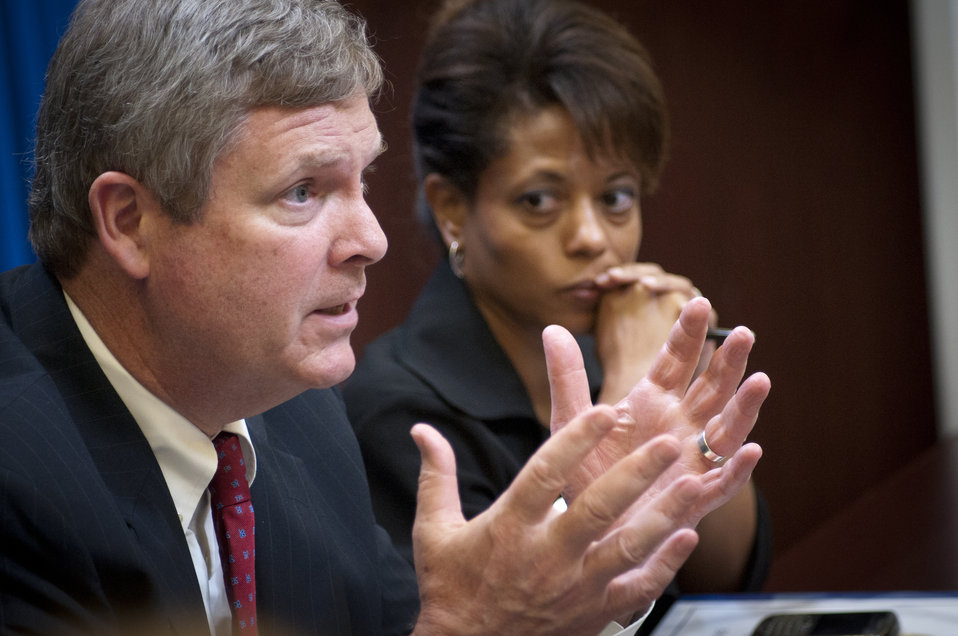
On Wednesday, Jul. 6, 2011, Agriculture Secretary Tom Vilsack attended a meeting at the White House in Washington, DC, with President Barack Obama, the President's Domestic Policy Adviser Melody Barnes and rural communities leaders from across the country for the White House Rural Champions of Change event. The purpose of this meeting is to strengthen rural communities and promote economic growth. Prior to coming here, they were posed with a question about, what should/should not the government be doing to strengthen rural communities and promote economic growth.